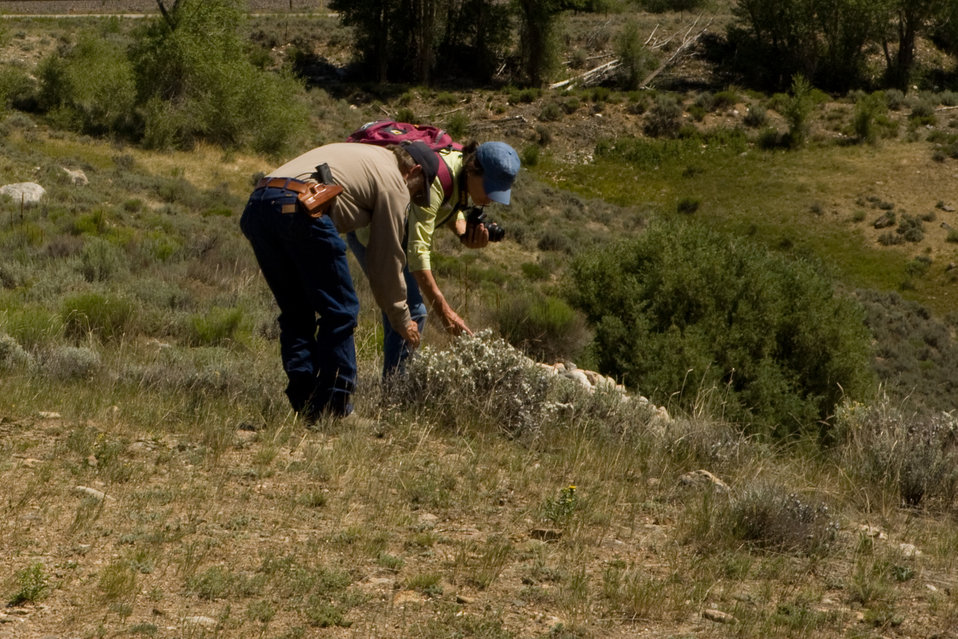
Colorado Rare Plant Conservation Initiative

The Colorado Rare Plant Conservation Initiative (RPCI) is a partnership of 23 statewide and regional agencies, private organizations, and academic institutions working to conserve 121 rare plants in Colorado. As part of these efforts the group developed the Colorado Rare Plant Conservation Strategy, developed Best Management Practices to reduce energy development impacts, addressed climate change, and developed focused strategies for the conservation of individual species at eight priority landscapes. The group has also worked to coordinate volunteer efforts for plant conservation across the state.